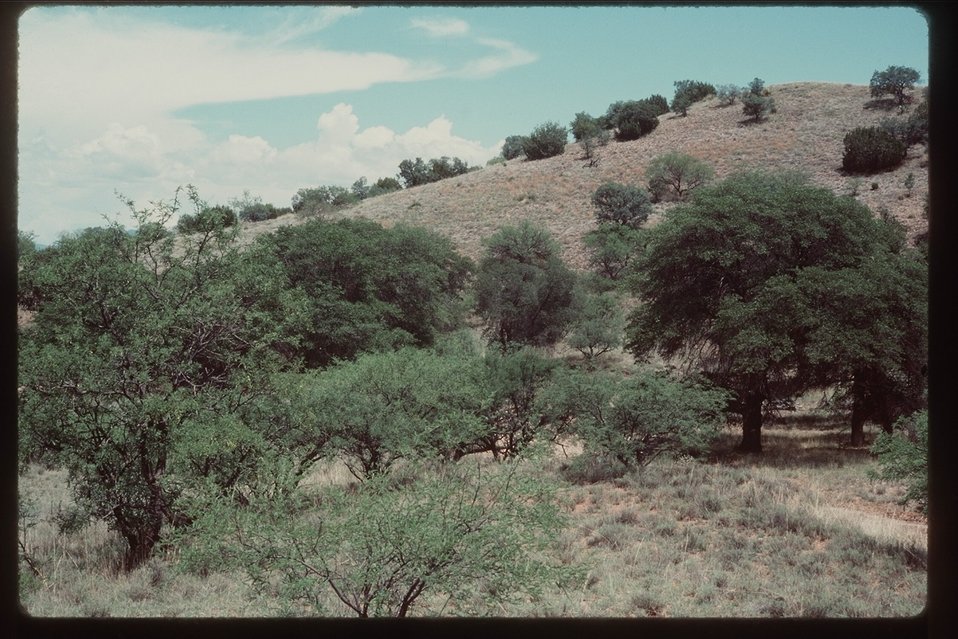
The side of a mountain covered in desert vegetation in the Empire-Cienega Resource Conservation Area.